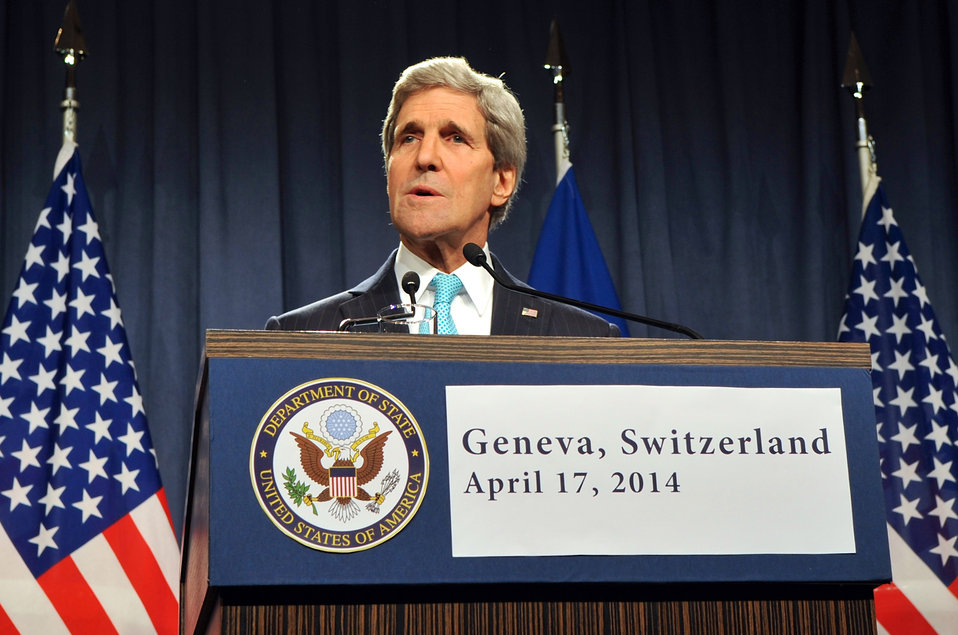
Secretary Kerry Speaks at News Conference Following Ukraine Meeting in Geneva

U.S. Secretary of State John Kerry speaks at a news conference following a meeting in Geneva, Switzerland, on April 17, 2014, with Russian, Ukrainian, and European Union officials about Ukraine.